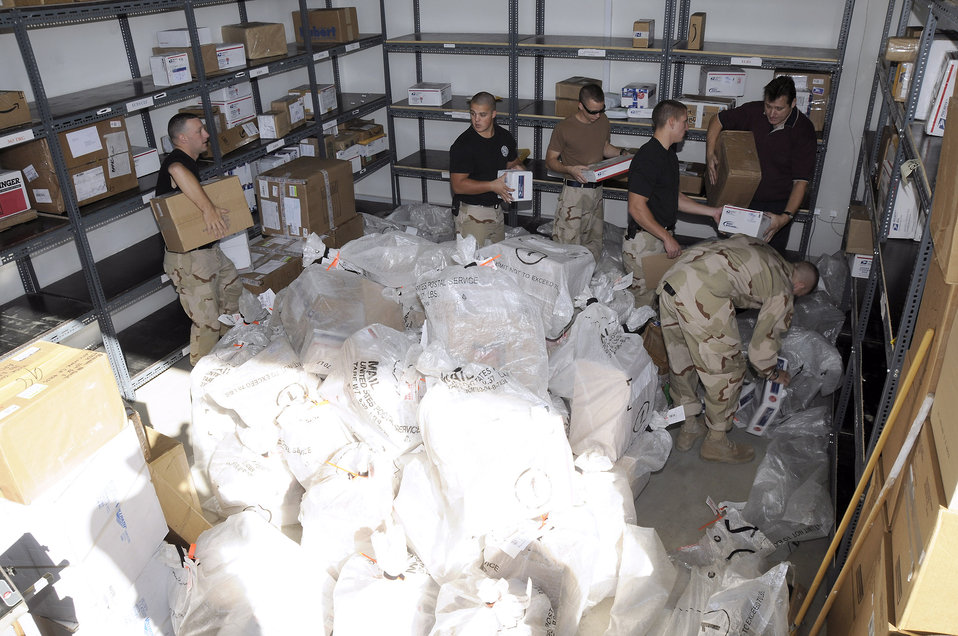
Letters, packages to Airmen increases during holiday season

Members of the 380th Expeditionary Civil Engineer Fire and Emergency Services help sort through incoming mail Dec. 8 at an air base in Southwest Asia. The fire department works alongside Alutiiq International Solutions LCC, which is contracted to provide personnel and services for the 380th Air Expeditionary Wing Post Office. They are busy trying to keep the mail coming and going during the busy holiday season.